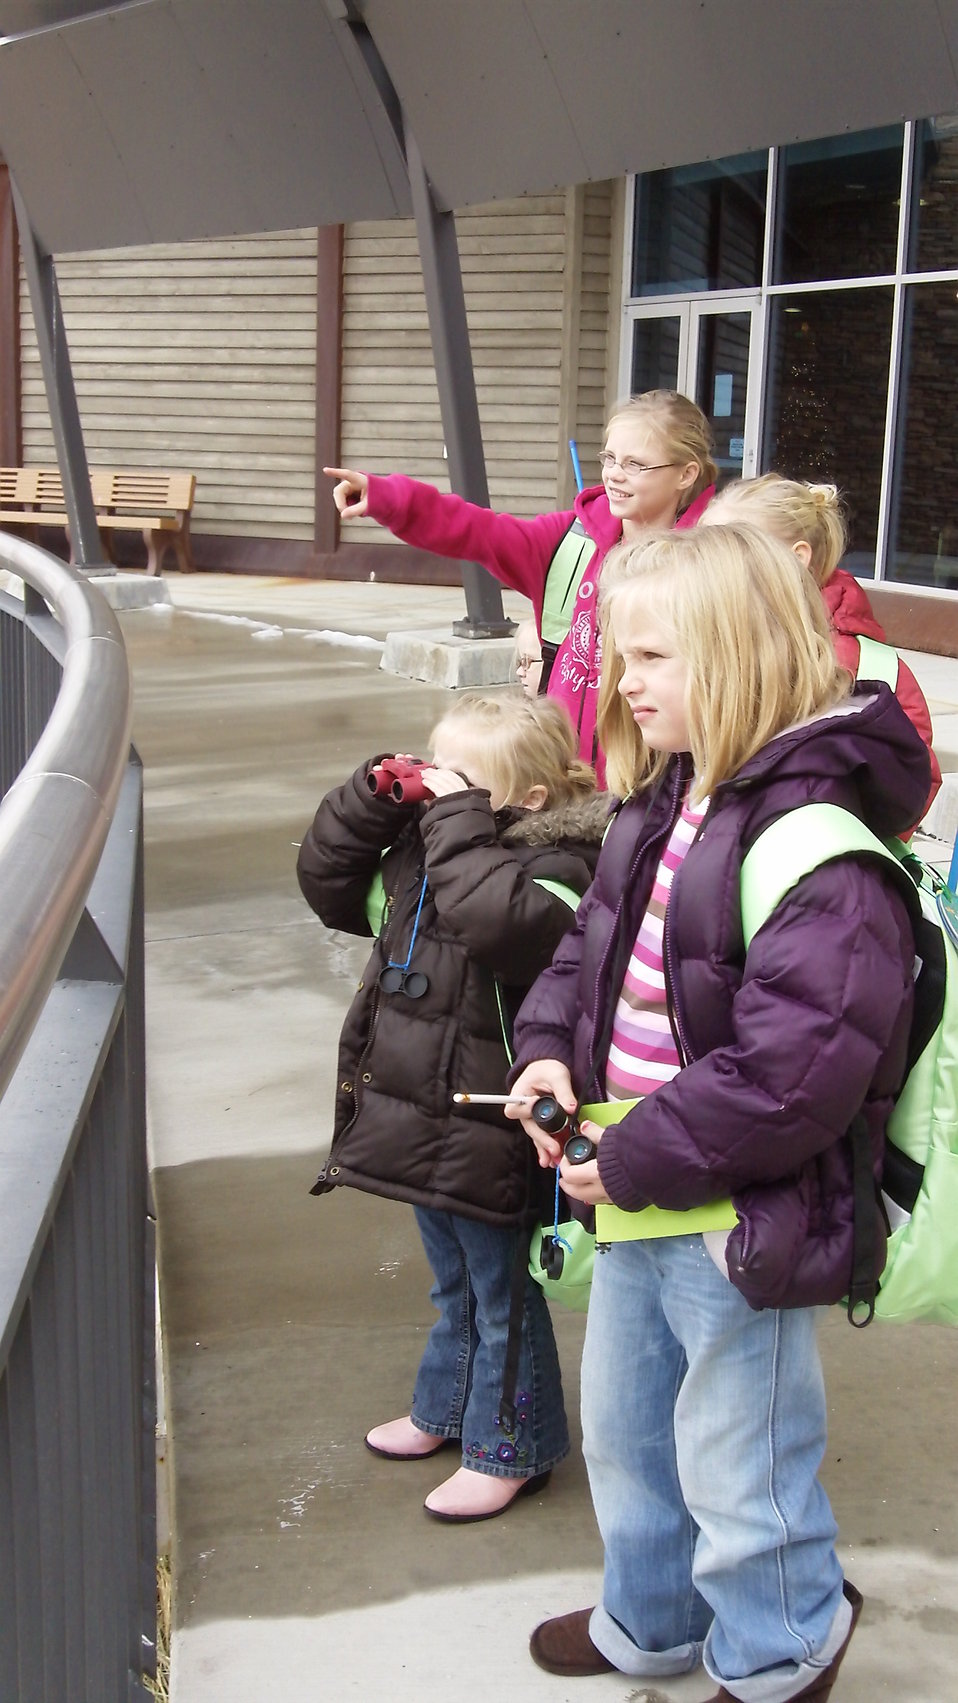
Jr. Ranger's Birding

Watching a Northern harrier glide by, the Talbot girls enjoy activities like birding, tracking and weather watching with their Jr. Ranger Activity Backpacks on their visit to Bear River Migratory Bird Refuge. The Jr. Ranger Activity Backpacks are filled with tools for outdoor exploration.